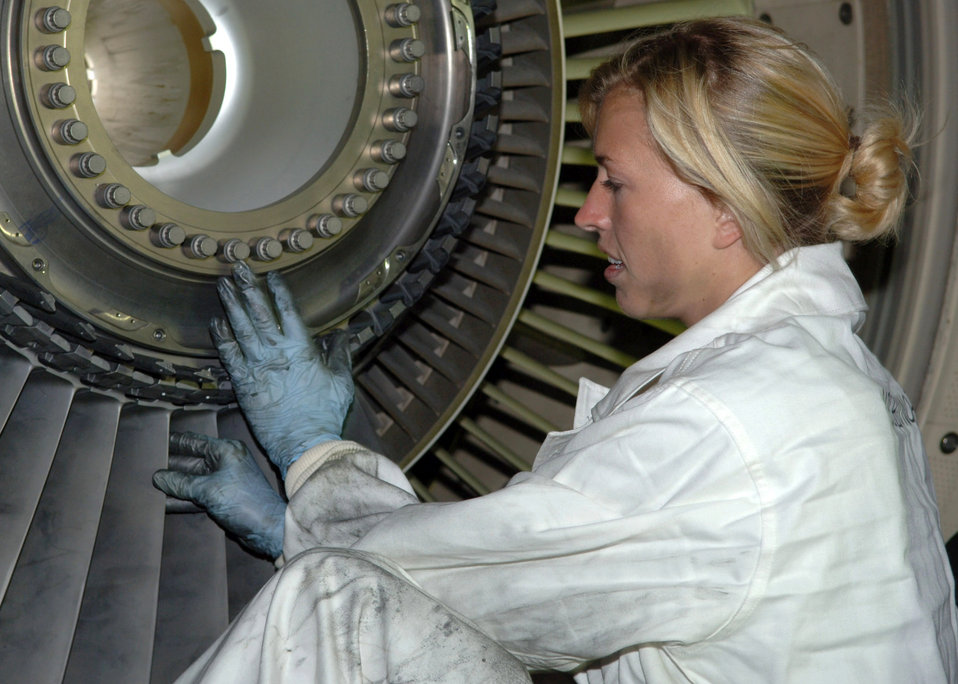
CENTAF Airpower Summary for March 19, 2007

Staff Sgt. Alisha Hutcheson replaces first stage fan blades on a KC-135 Stratotanker engine March 14 at a forward-deployed location. The tankers Sergeant Hutcheson maintains, which average nearly twice her age, are among the oldest planes in the Air Force fleet. Replacing the tankers is the Air Force's number one procurement priority. Sergeant Hutcheson is a KC-135 mechanic in the 380th Expeditionary Aircraft Maintenance Squadron.